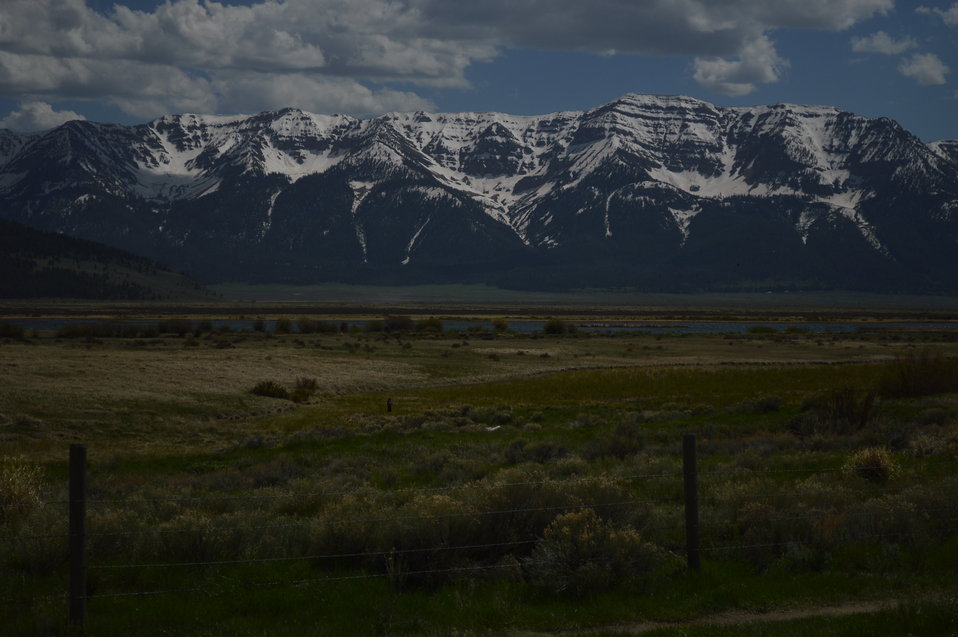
Regional Leadership Visit to Montana 2014